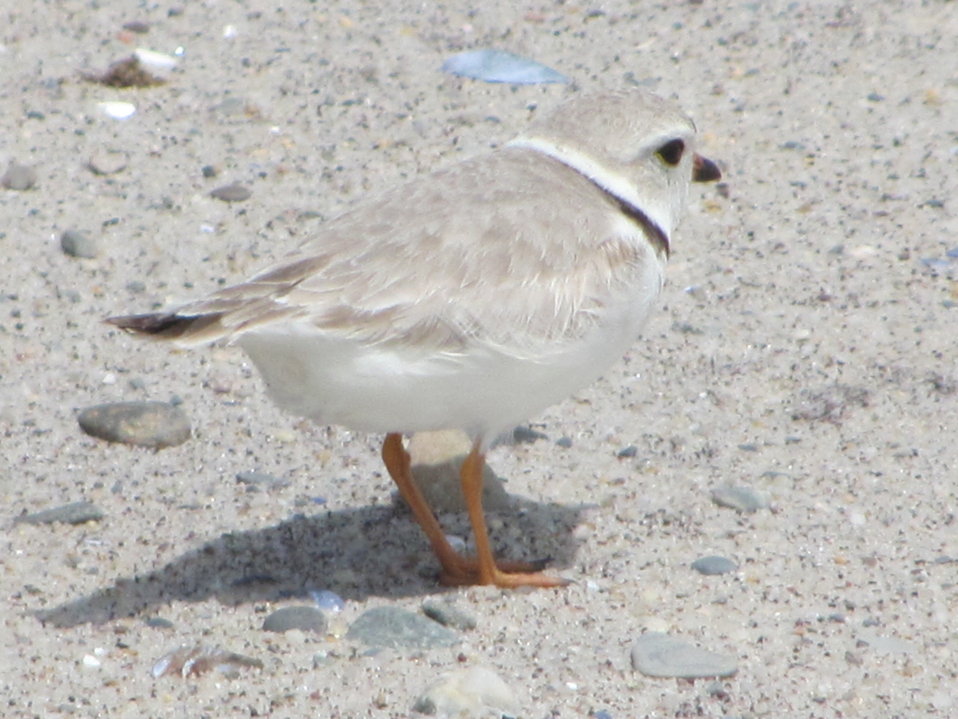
Piping plover, Monomoy Refuge

Piping plover, Monomoy National Wildlife Refuge, MA.